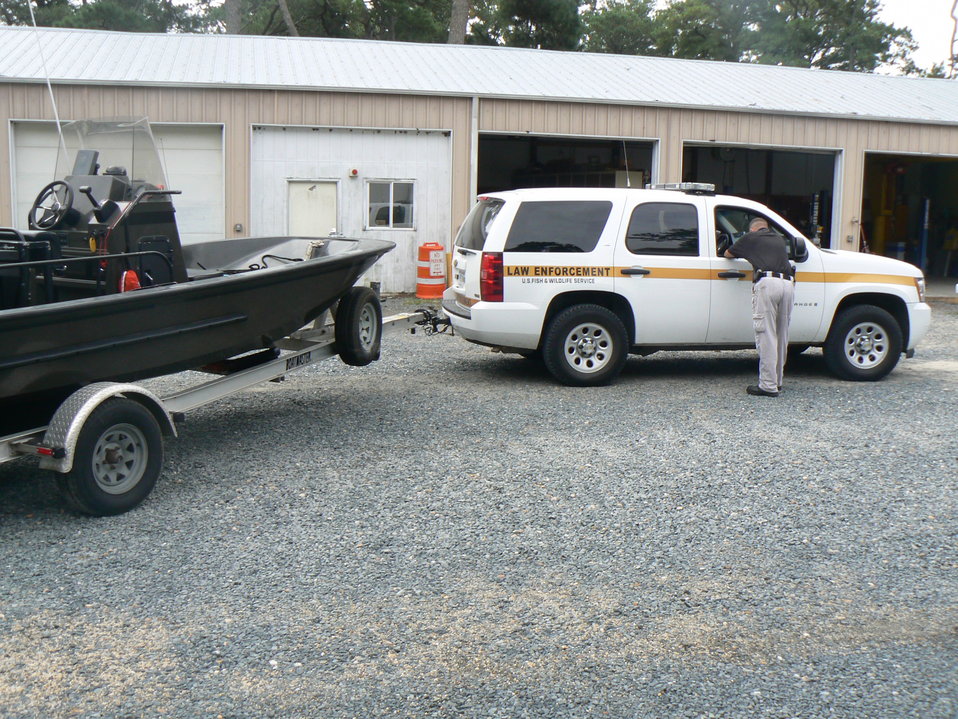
Hurricane preparation at Chincoteague NWR

Refuge staff moving a boat to higher ground at Chincoteague National Wildlife Refuge, VA in preparation for Hurricane Irene.